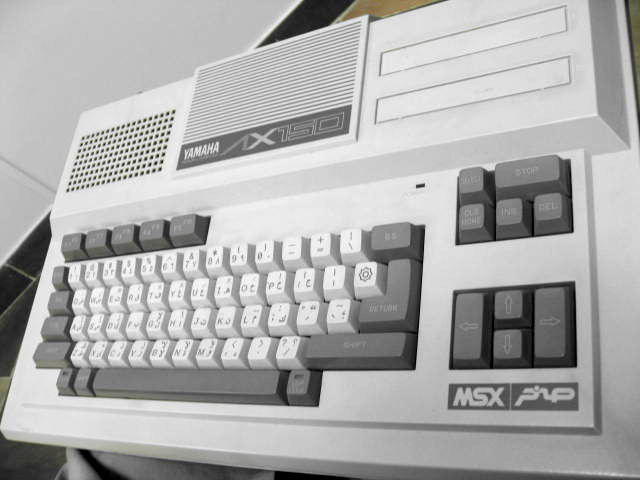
MSX COMPUTER IN ARAB STATES IN THE GULF - USED BY YAMAHA AX 120 - IT WAS FOUND IT , IT WAS NAME (( صخر - SAKHER )) .